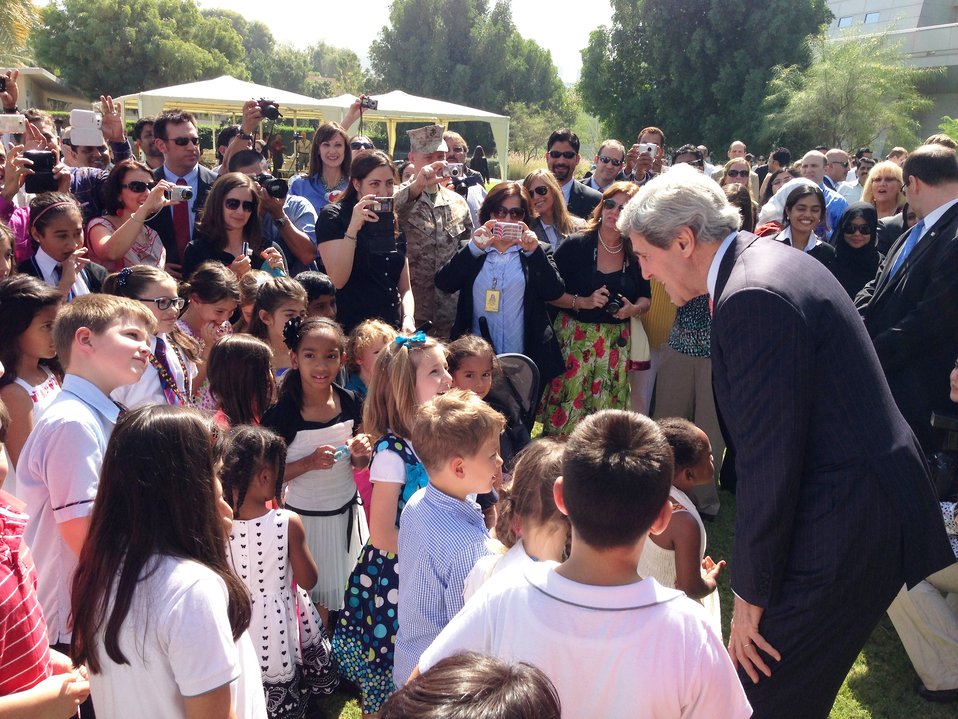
Secretary Kerry Interacts With Children

U.S. Secretary of State John Kerry interacts with children of the staff at the U.S. Embassy in Abu Dhabi, United Arab Emirates, on March 5, 2013.